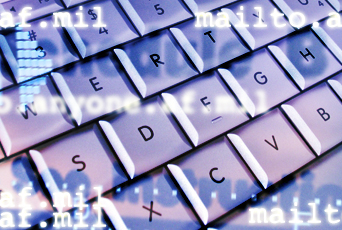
Web-based communications tools

The Air Force Instant Messenger and Global Internet Mail programs help ease the stress of deployments by keeping family members in touch with their deployed spouse, mom or dad.